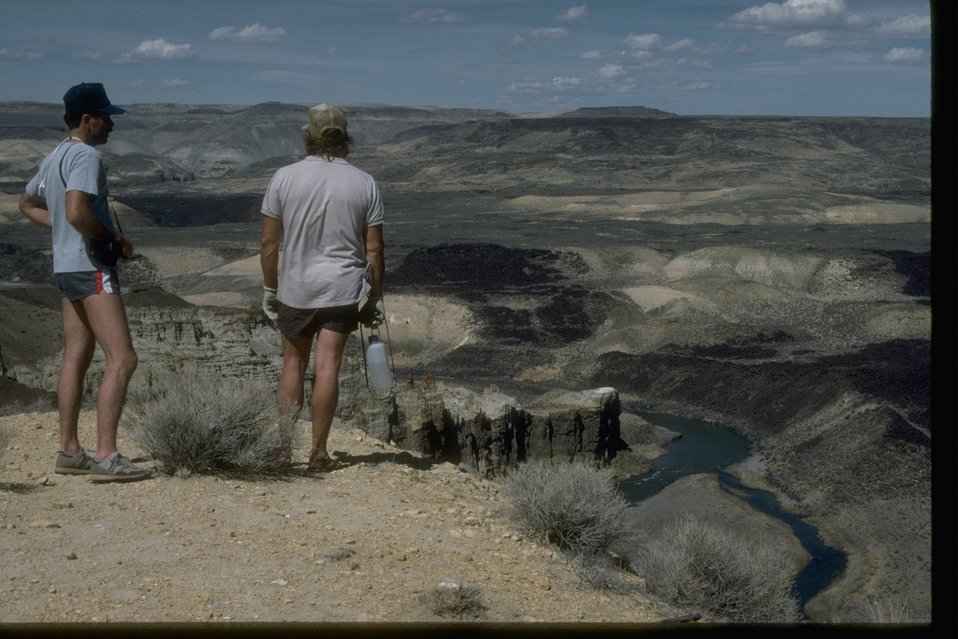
Visitors at Chalk Basin of the Lower Owyhee Canyon. OR 3-110